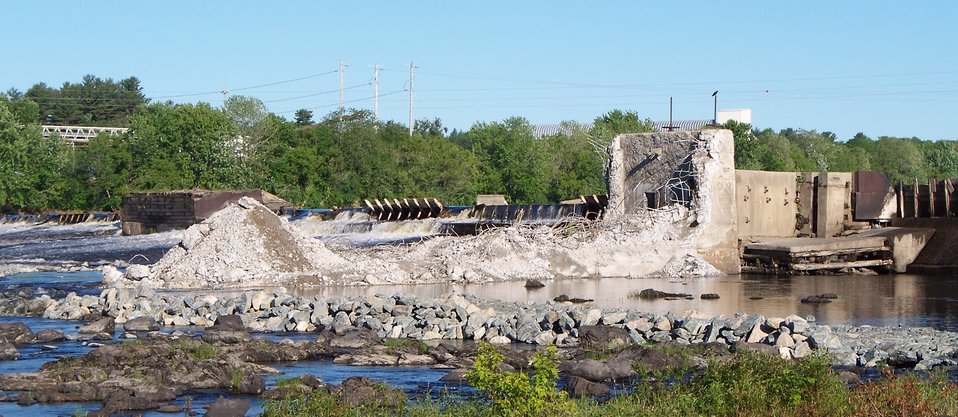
Week 1 of demolition